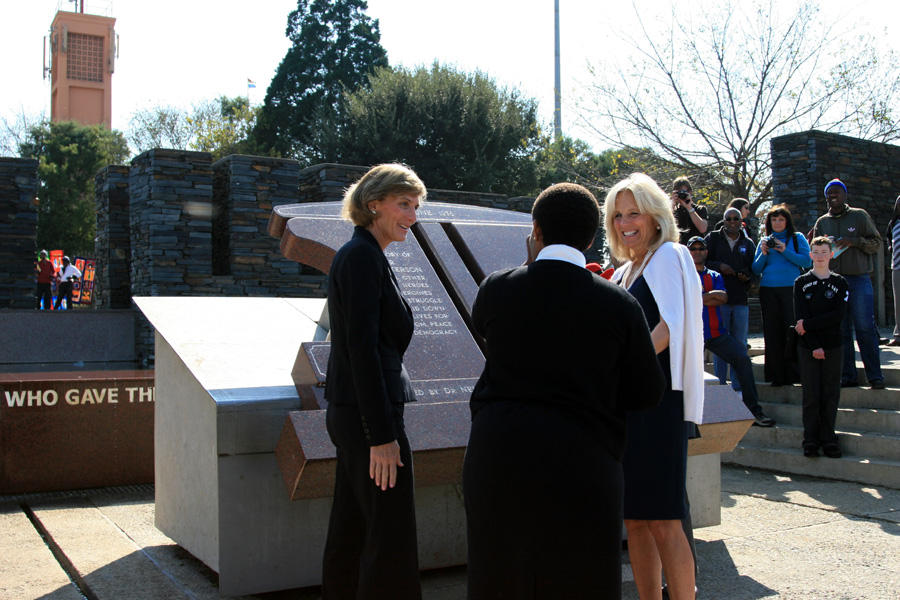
Dr. Jill Biden and Liz Berry Gips Visit Hector Pieterson Museum

Dr. Jill Biden, wife of Vice President Joseph Biden, and Liz Berry Gips, wife of U.S. Ambassador to South Africa Donald H. Gips, visit the Hector Pieterson Museum in Soweto, South Africa, on June 12, 2010.